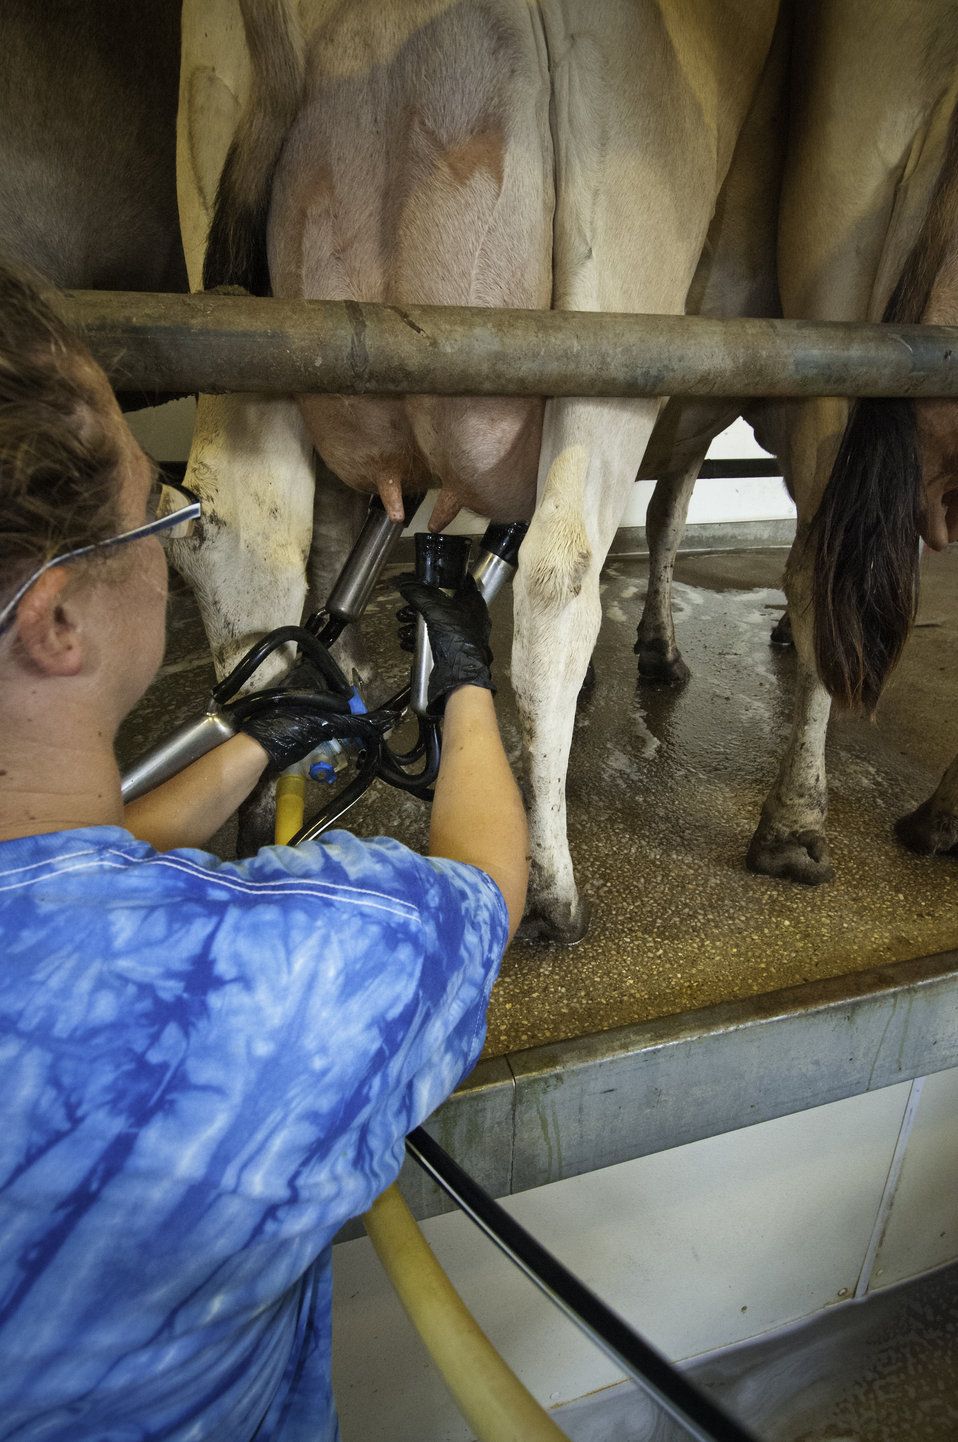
Chapel’s Country Creamery farm manager Courtney Biggs prepares cows to be milked at Chapel’s Country Creamery in Easton, MD. This dairy produces artisan cheeses produced from fresh raw milk produced on the family's Grade A dairy farm. The dairy herd consists of grass fed Jersey and Holstein cows that produce our high quality milk, rich in cream. The milk is all-natural and contains no synthetic hormones, antibiotics, or chemical compounds. The dairy produces its own cheeses from start to finish, which insures the highest quality possible. They use only vegetable rennet and all natural ingredients in their cheese. The Jersey and Holstein cows graze on clover and rye grass on 45 acres of pasture. The cows are rotated among 32 different pastures to insure that the cows are eating the freshest and most nutritious part of the grass thus providing the highest quality of raw milk that is rich in cream. The dairy received the Talbot County, MD Soil Conservation Award for environmental friendly operations for soil, air and water quality concerns.